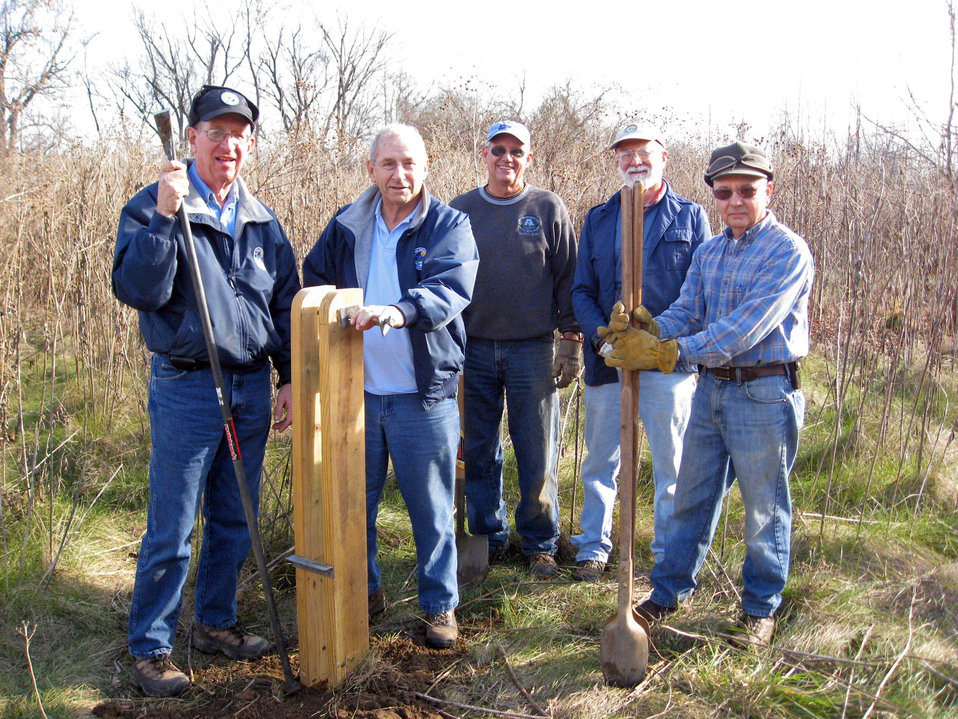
Volunteers play an integral role at Ohio River Islands National Wildlife Refuge in West Virginia.